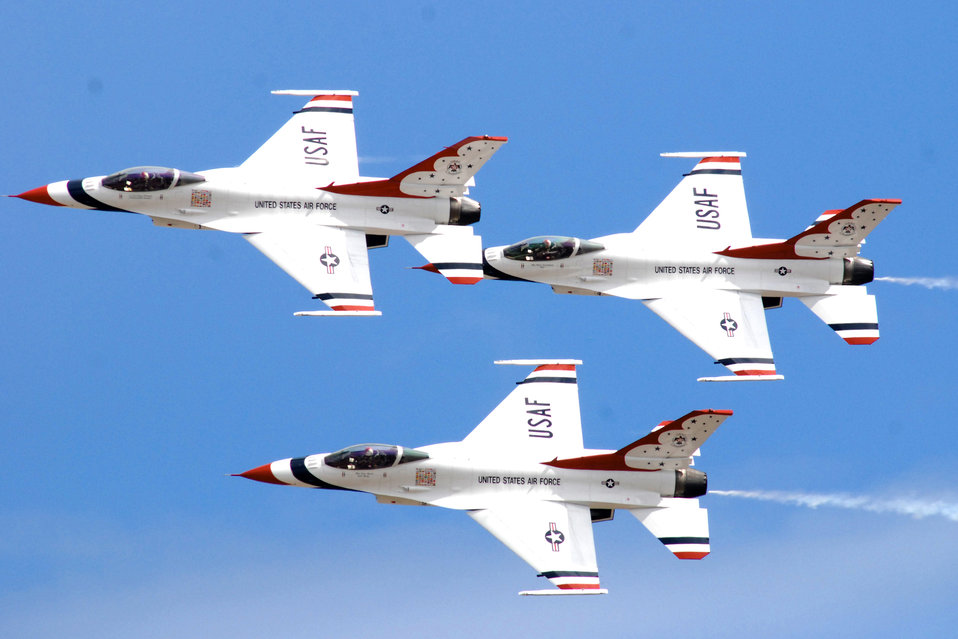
Air Force precision

The U.S. Air Force Demonstration Squadron Thunderbirds practice their performance over Hickam Air Force Base, Hawaii, for the